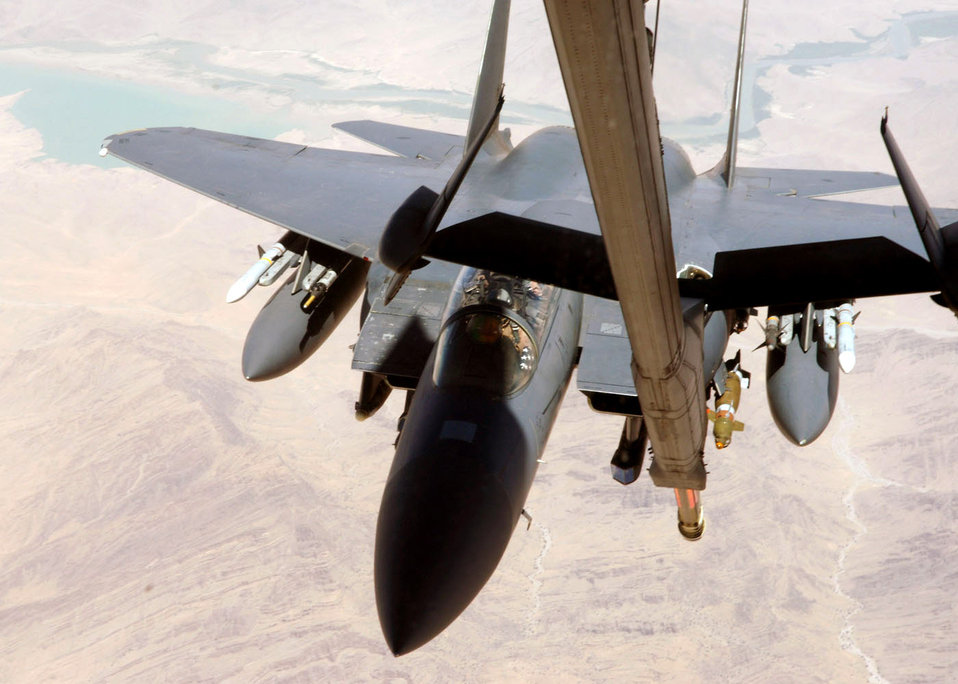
Airpower summary for Aug. 7, 2007

An F-15E Strike Eagle moves up to the refueling boom below a KC-10 Extender July 25 during an Operation Enduring Freedom mission. Coalition tankers flew 45 sorties and off-loaded approximately 2.3 million pounds of fuel to 201 receiving aircraft.